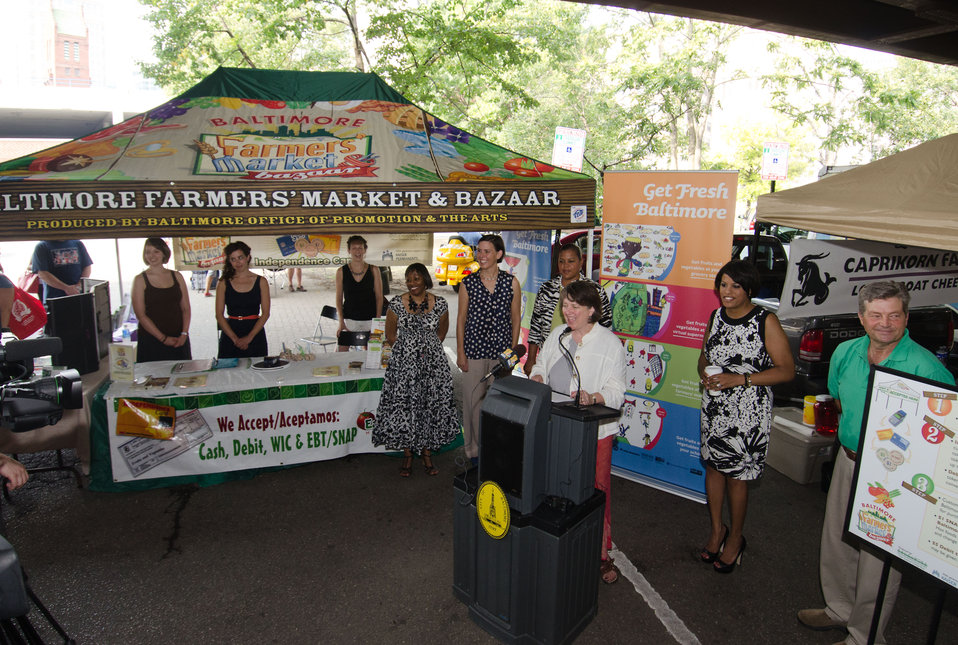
Agriculture Deputy Secretary Kathleen Merrigan helps launch Baltimore’s Farmers Market and Bazaar use of the U.S. Department of Agriculture’s (USDA) Food Nutrition Service’s (FNS) Supplemental Nutrition Assistance Program (SNAP) Electronic Benefits Transfer (EBT) cards, Baltimore Bucks, and debit card utilizing a wireless connection in Baltimore, MD on Sunday, July 8, 2012. The U.S. Department of Agriculture, Kaiser Permanente of the Mid-Atlantic States, Abell Foundation, the Harry and Jeanette Weinberg Foundation, the Baltimore Community Foundation, Maryland Hunger Solutions, the Maryland Department of Agriculture Baltimore Office of Promotions and the Arts, and Department of Social Services are participating partners in the farmers market.